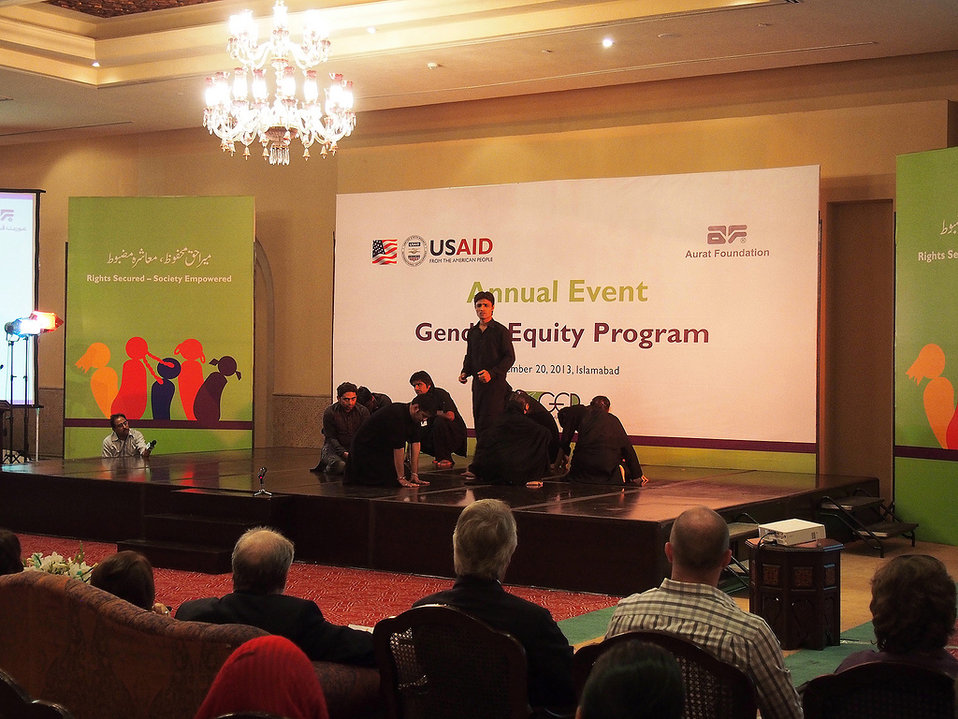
Gender Equity Program, Pakistan

USAID and Aurat Foundation annual event in Islamabad, Sept. 20, 2013